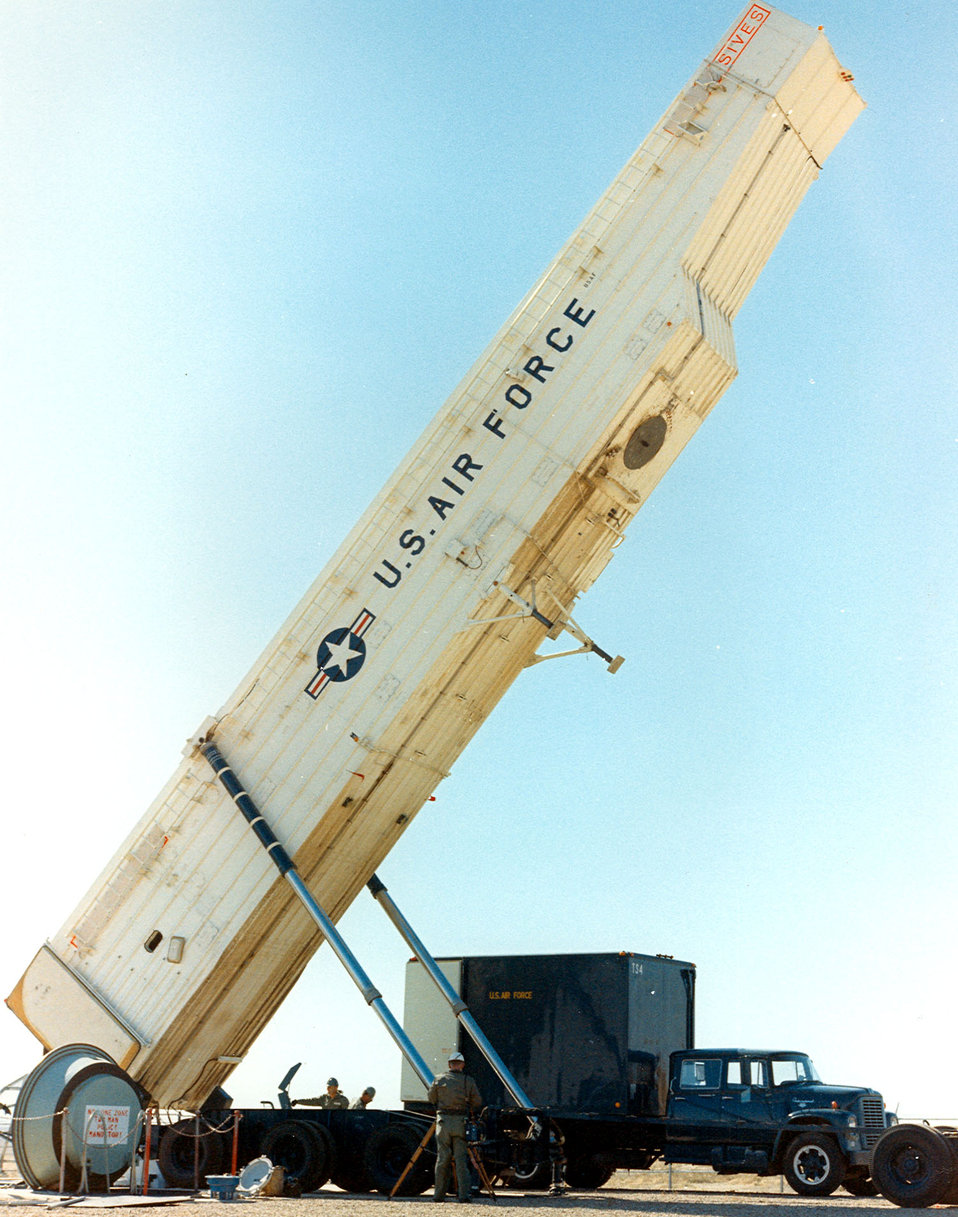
Oscar-01 launch control facility

The missile trailer located in the compound of the Oscar -01 launch control facility at Whiteman Air Force Base, Mo. The base is the home to the only intercontinental ballistic missile launch control facility located on a military base. From 1963 to 1995, the 351st Strategic Missile Wing was assigned to Whiteman and operated the Minuteman II ICBM weapon system.